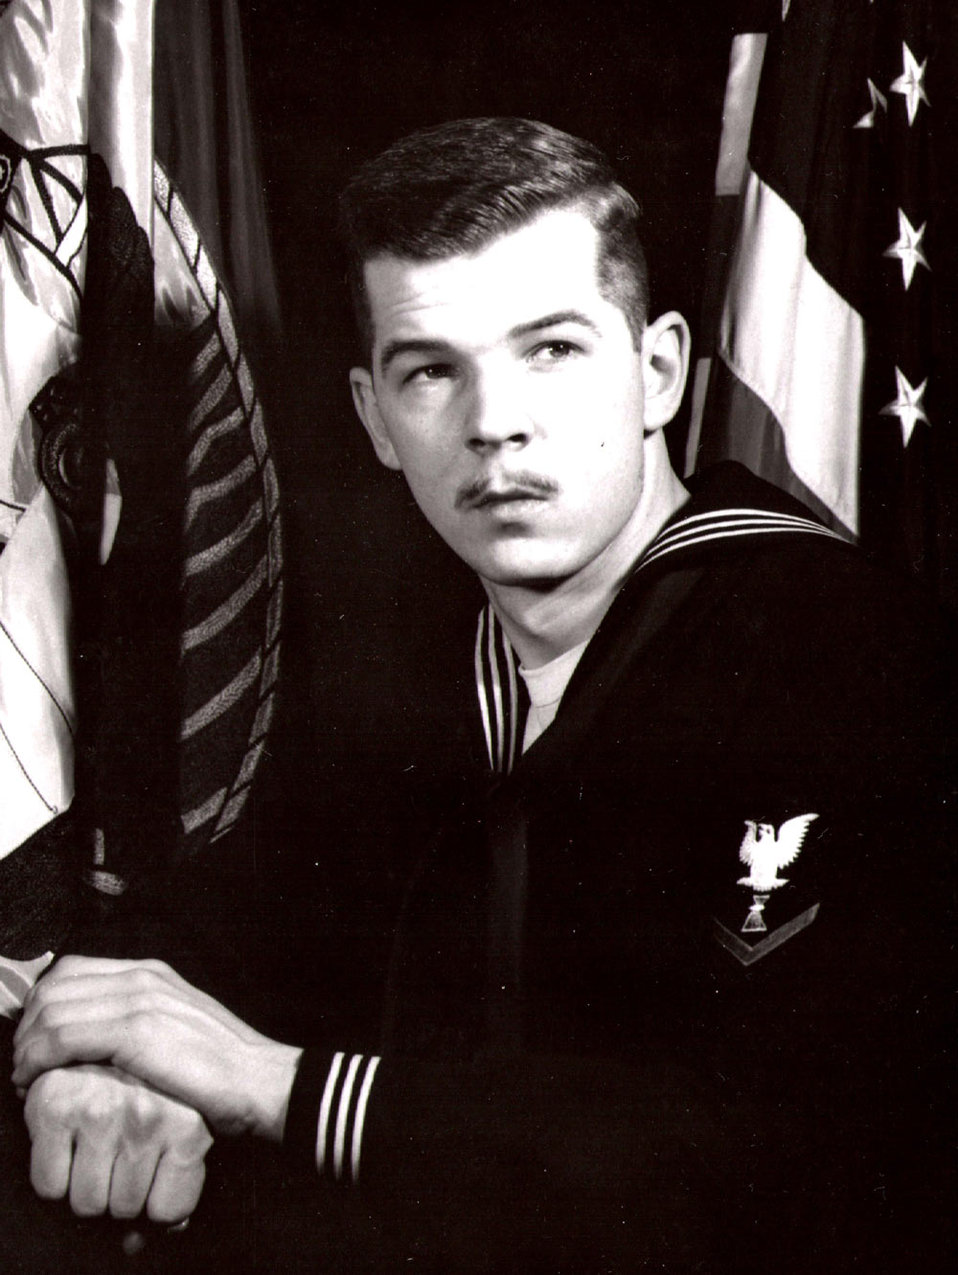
E. Peter Steenstra -- Northeast Region

E. Peter Steenstra of Craig Brook National Fish Hatchery is a U.S. Navy veteran. He attended Photographer's Mate 'A' School at Naval Air Station in Pensacola, Fla., and upon graduation was assigned to the U.S. Naval Air Station in Keflavik, Iceland. While in Iceland, Peter took flights to Scotland and England to photograph NATO activities in the North Atlantic. Upon transfer from Keflavik, he was assigned to the carrier U.S.S. Independence, CVA-62, with the U.S. 7th Fleet, serving in the South China Sea and the South Pacific. While at sea, his duties included public relations and operations involving seven naval air squadrons aboard Independence. Following his years in the Navy, Peter taught in public schools for 10 years, and then attended graduate school at the University of Maine with a focus in environmental education.
In 1995, Peter was hired by the U. S. Fish and Wildlife Service as an educator and visitor services specialist for Maine’s endangered sea-run Atlantic salmon program at the Maine Fisheries Program Complex. The complex comprises Craig Brook and Green Lake national fish hatcheries and the Maine Fishery Resources Office. Visitors to the Craig Brook visitor center include thousands of students per year who learn about the Atlantic salmon’s life cycle, natural habitat and role within their migratory ecosystems.